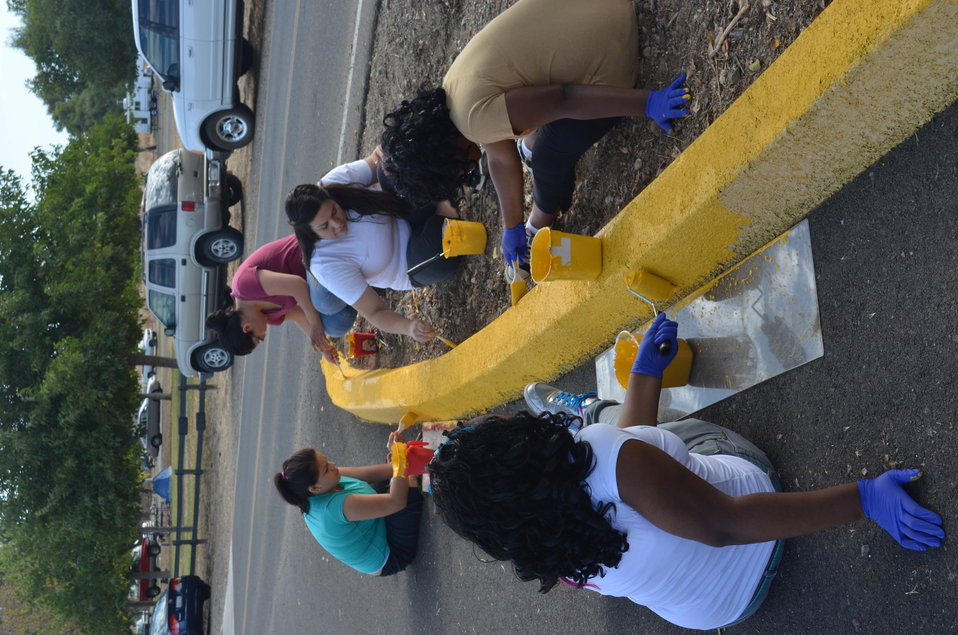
National Public Lands Day at Success Lake

Volunteers at Success Lake near Porterville, Calif., apply paint to a parking barrier in celebration of National Public Lands Day Sept. 24. More than 250 volunteers turned out to help plant trees and help at the park. Success Lake was one of seven U.S. Army Corps of Engineers Sacramento District recreation parks that participated in the event.